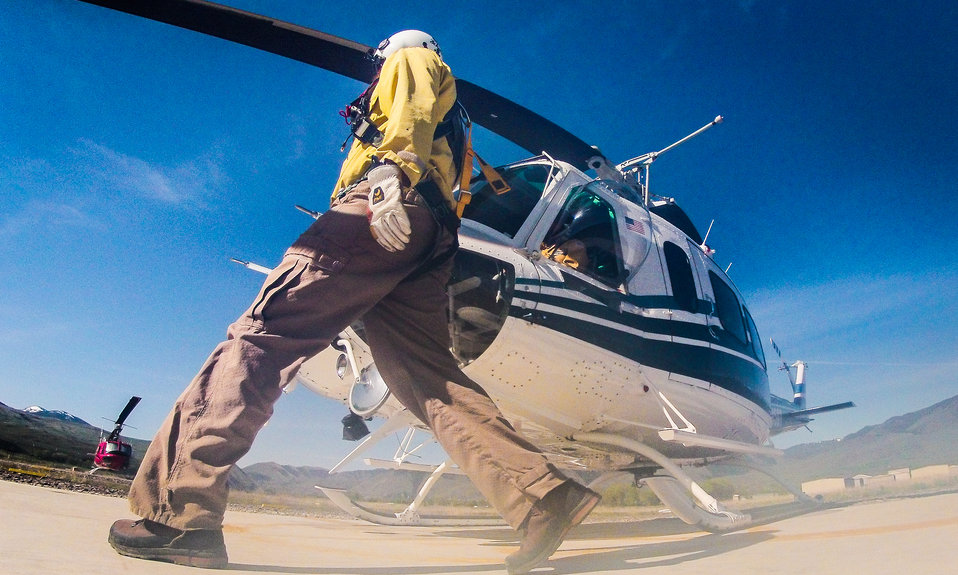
Idaho Helicopters, Inc., Assistant Chief Pilot JT Theis keeps the Bell 205A-1 helicopter steady, while a spotter performs a walk-around inspection before take off at the U.S. Department of Agriculture (USDA U.S. Forest Service (USFS) National Helicopter Rappel Program’s Rappel Academy at Salmon Air Base in Salmon, ID on Wednesday, May 14, 2014. From May 12, 2014, 72 veteran rappellers from all over the nation, 30 support staff, and three helicopters with flight crews attend the training at Salmon Air Base. Participants will rappel into the Perreau Creek area. The annual training is delivered in accordance with the National Rappel Operations Guide; strengthen leadership, teamwork, and communications within the rappel community, and produces quality aerial delivered firefighters for use in fire and aviation operations. The USDA Forest Service National Helicopter Rappel Program’s primary mission is initial attack. Rappel crews may be utilized for large fire support, all hazard incident operations, and resource management objectives.